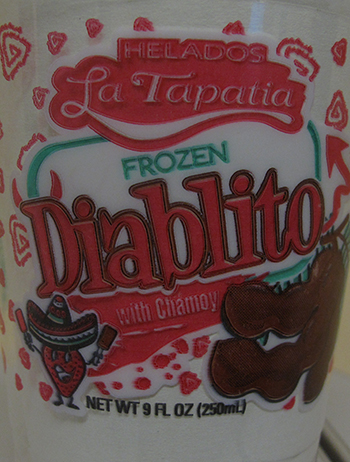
RECALLED – Ice cream products

March 19, 2014 – Product Recall – Helados La Tapatia, Inc. Recalls Products Because of Possible Health Risk.